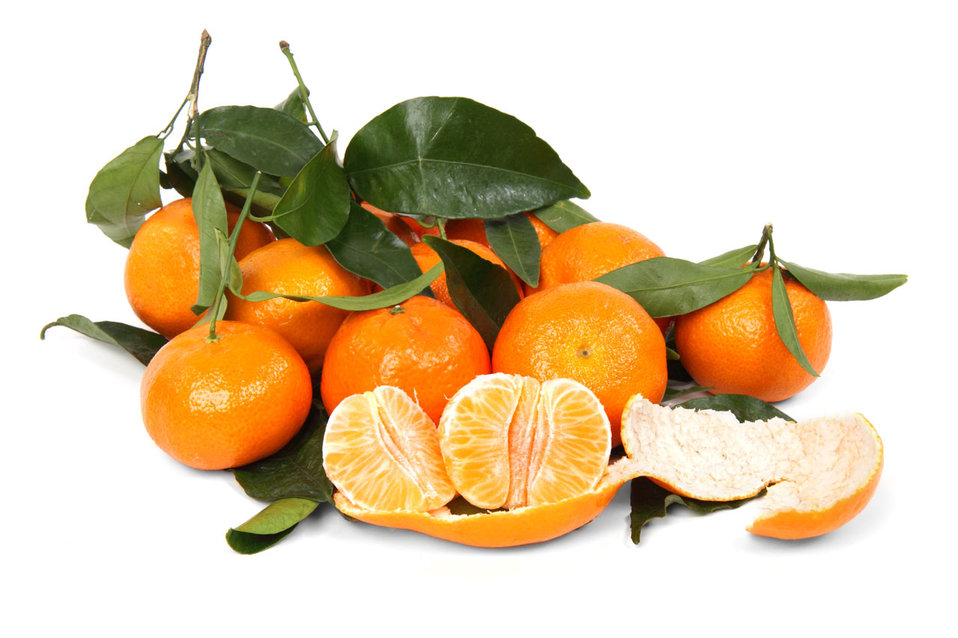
Mandarins isolated on white background.